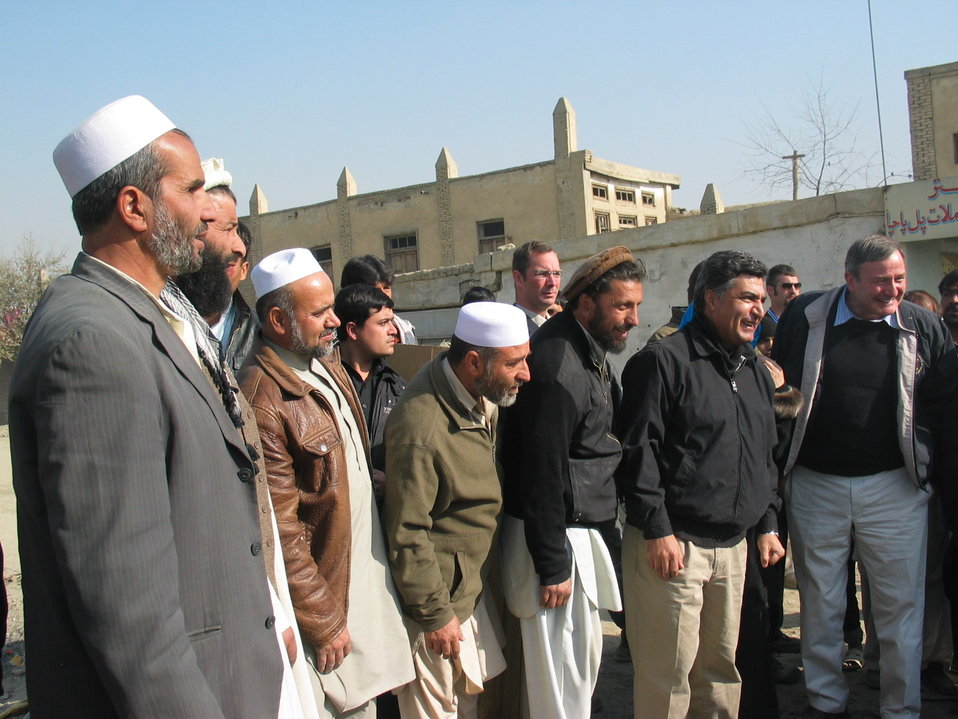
Kabul River Bridge Renovation, December 3, 2010